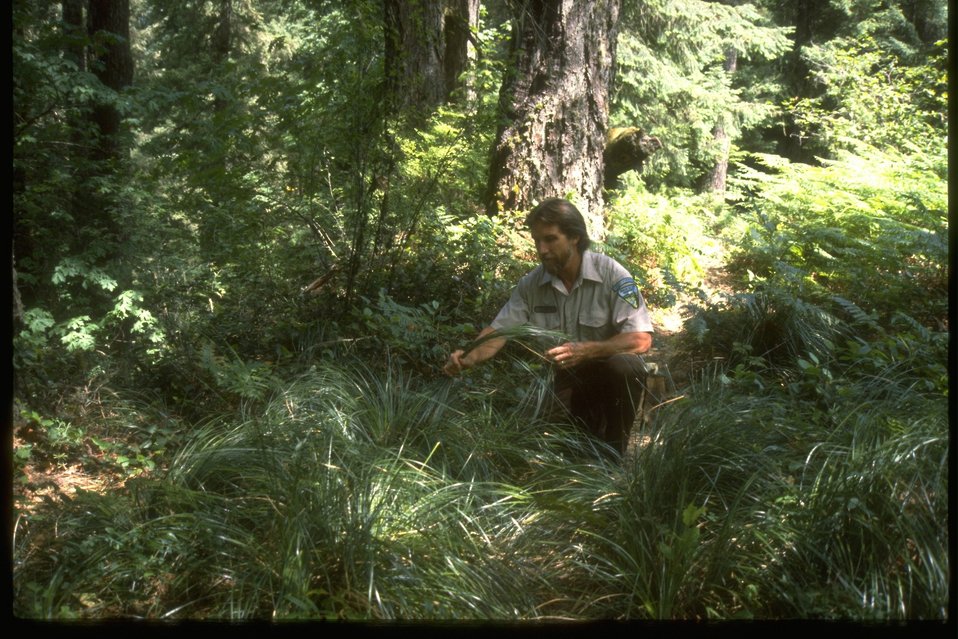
Special Forest Product (Bear Grass).